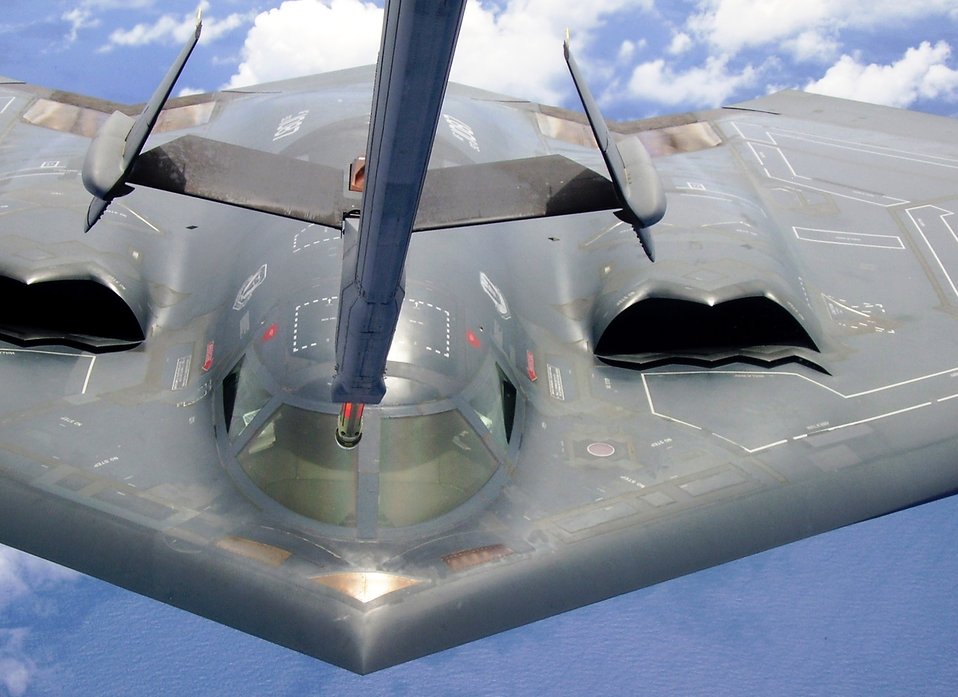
Royal Air Force pilot makes history in B-2 Spirit

Royal Air Force Squadron Leader David Arthurton and Capt. Timothy Rezac fly a B-2 Spirit bomber as they receive fuel from a KC-10 Extender during a training mission near Andersen Air Force Base, Guam, on Aug. 2. Squadron Leader Arthurton is with the United Kingdom's Royal Air Force Personnel Exchange Program. He and Captain Rezac are with the 13th Expeditionary Bomb Squadron.